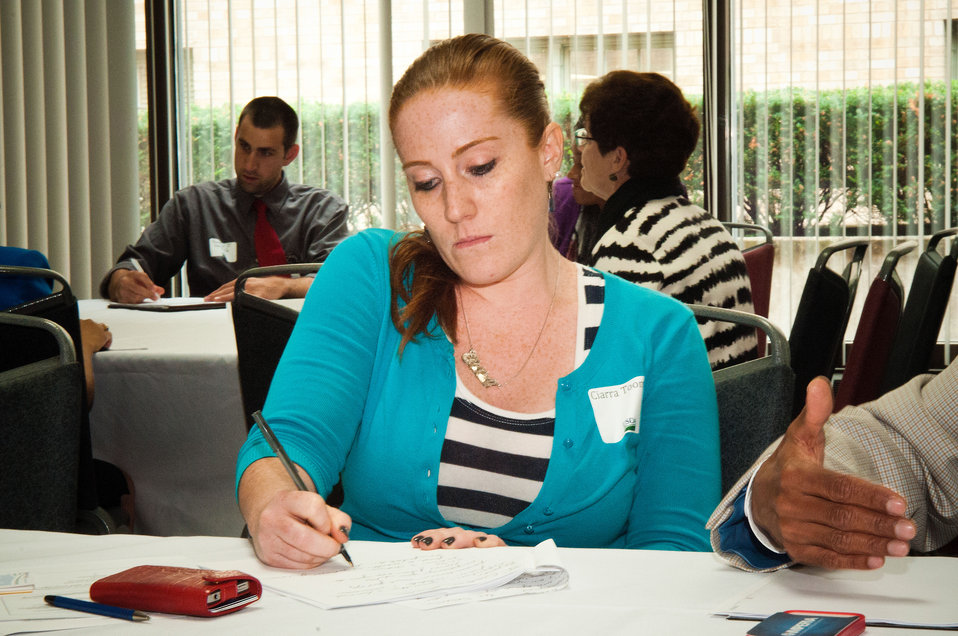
U.S. Department of Agriculture (USDA) Office of General Counsel (OGC) Ciarra Toomey takes notes during a discussion on “Customer Service” advice at USDA’s Office of Human Resources Management (OHRM) Virtual University’s Fall Flash Mentoring Event at USDA in Washington, D.C. on Thursday, Sept. 6, 2012 in Washington, DC.